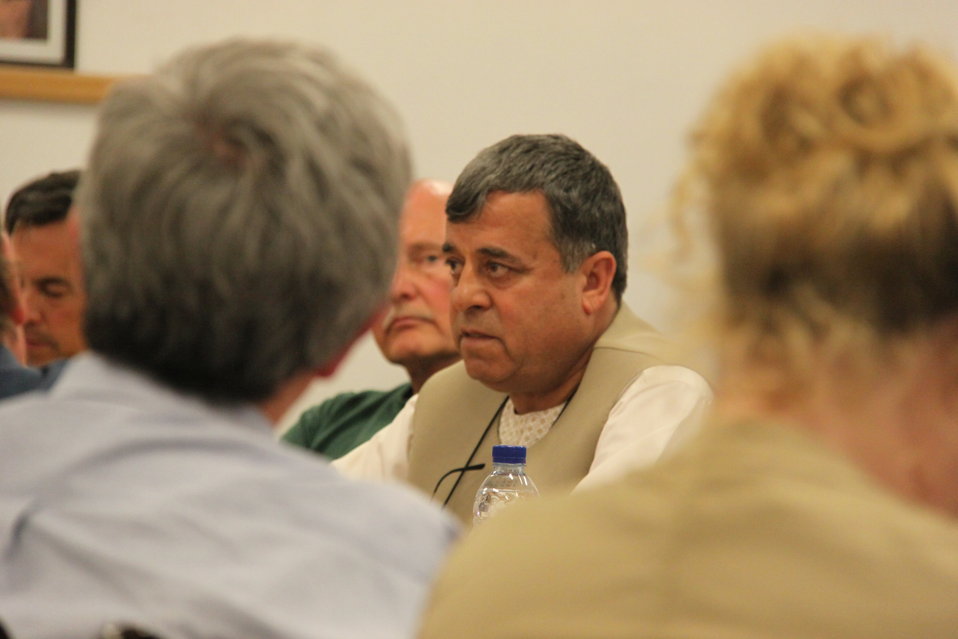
Meeting with Local Leaders in Kandahar